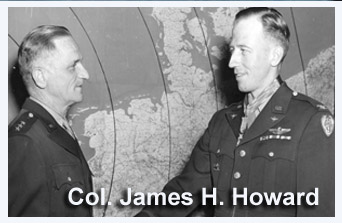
Col. James Howard

Lt. Gen. Carl Spaatz, commanding general of the U.S. Strategic Air Force in Europe, congratulates Col. James Howard after presenting him with the Medal of Honor. Colonel Howard destroyed three enemy aircraft attacking a group of heavy bombers on a run to Oscherleben, Germany.